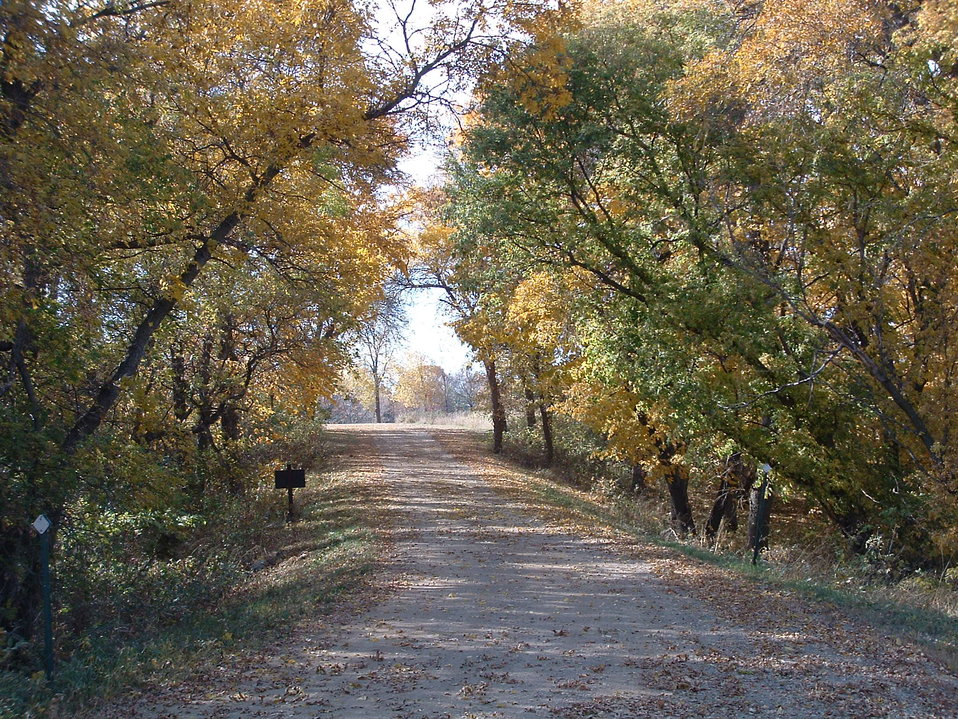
Welcome to Waubay

A tunnel of trees in fall colors welcomes visitors to Waubay National Wildlife Refuge.